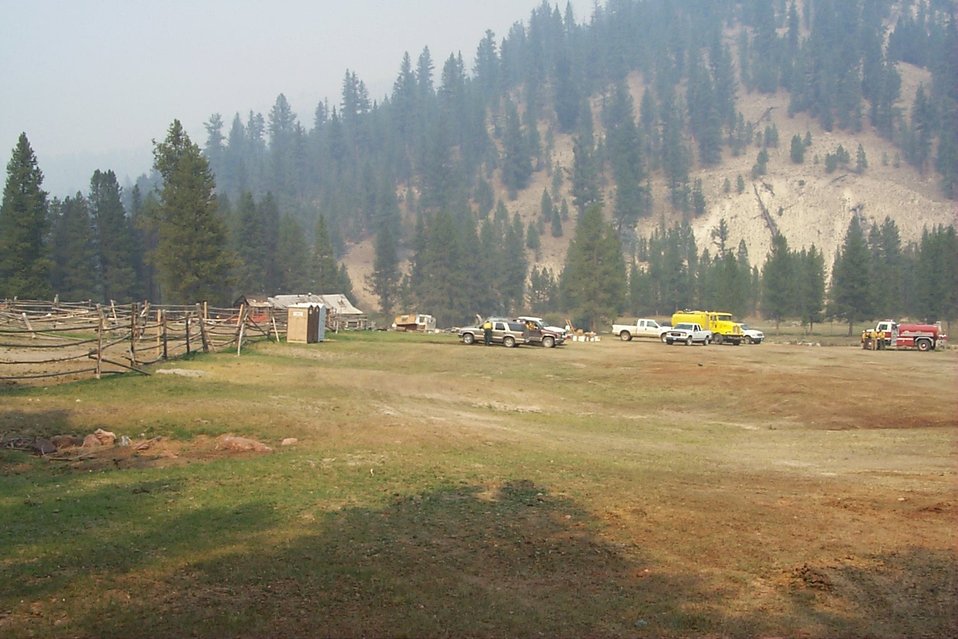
Camp Vehicles Fire Clearwater Fire Salmon Field Office USRD Upper Snake River District